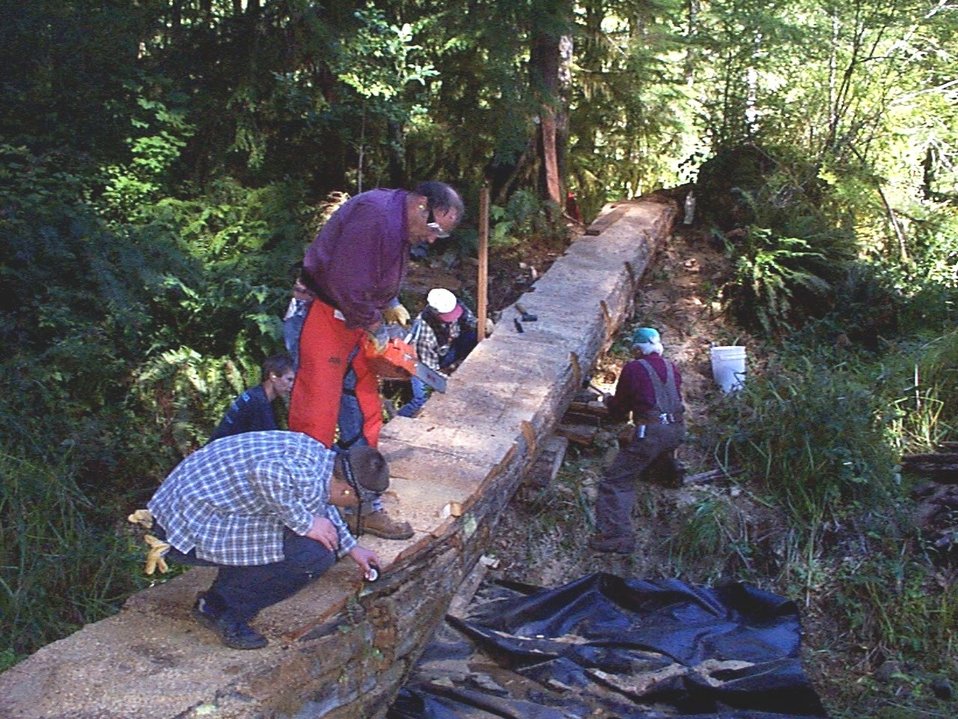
Boy Scouts install hand rail on the foot bridge at McGowen Creek.